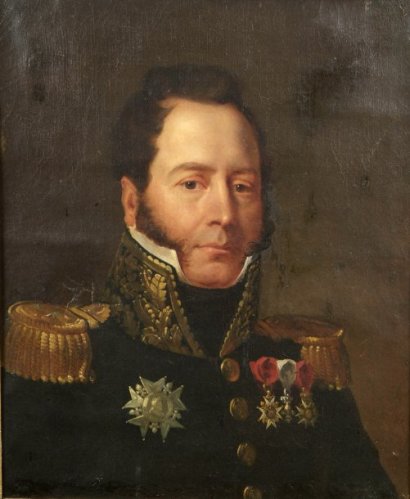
Armand Lebrun de La Houssaye (1768-1846) Col